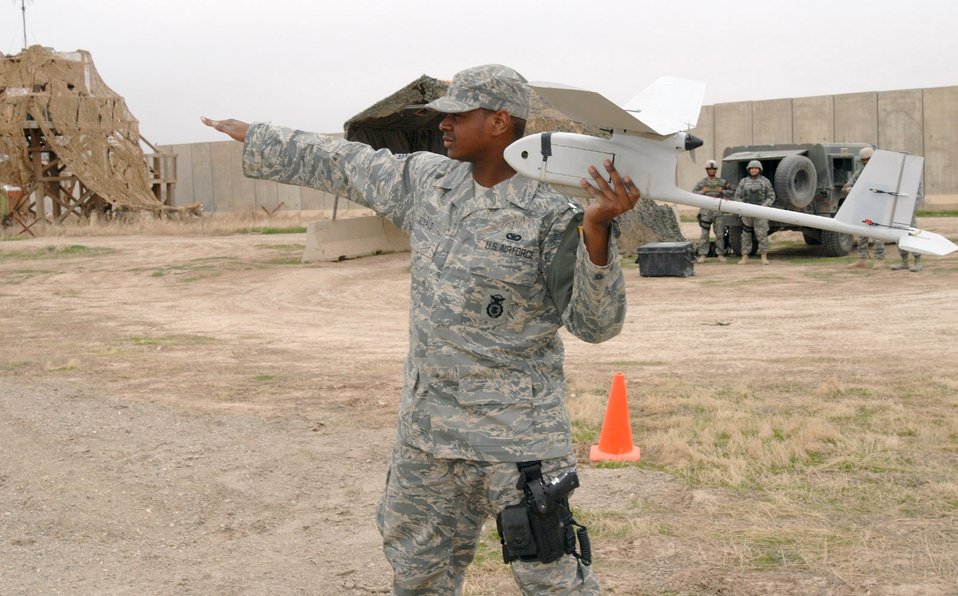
UAVs aid force protection efforts

Senior Airman Glenn Gerald prepares to launch an RQ-11 Raven at Kirkuk Regional Air Base, Iraq. Despite weighing less than 5 pounds, these unmanned aerial vehicles play a vital role in securing the base and surrounding neighborhoods. Airman Gerald is a 506th Expeditionary Security Forces Squadron Raven operator.